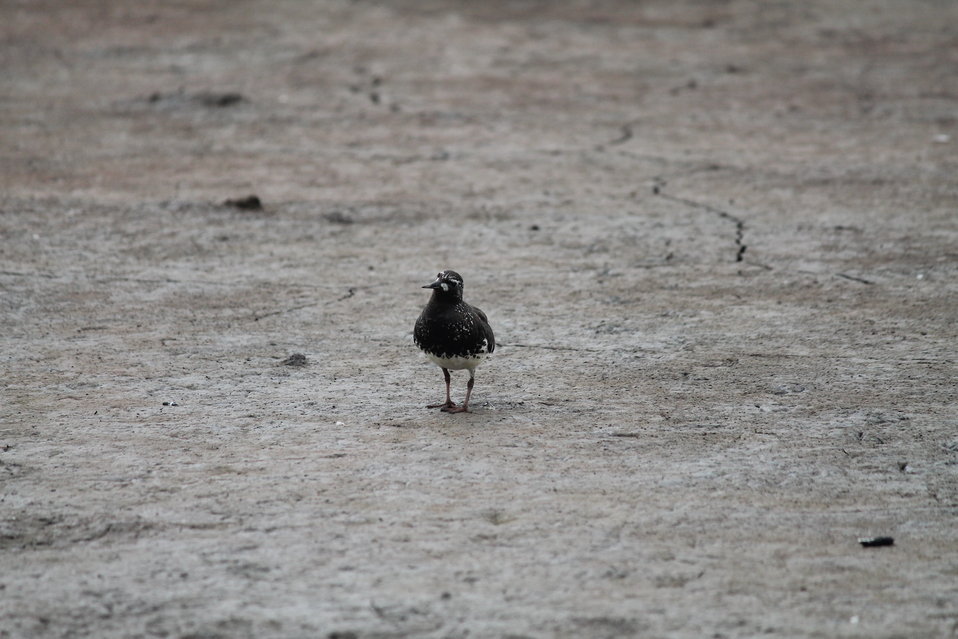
Curious Black turnstone

Black turnstones are a common shorebird found on the coastal zone of Yukon Delta NWR.

USFWS Yukon Delta NWR